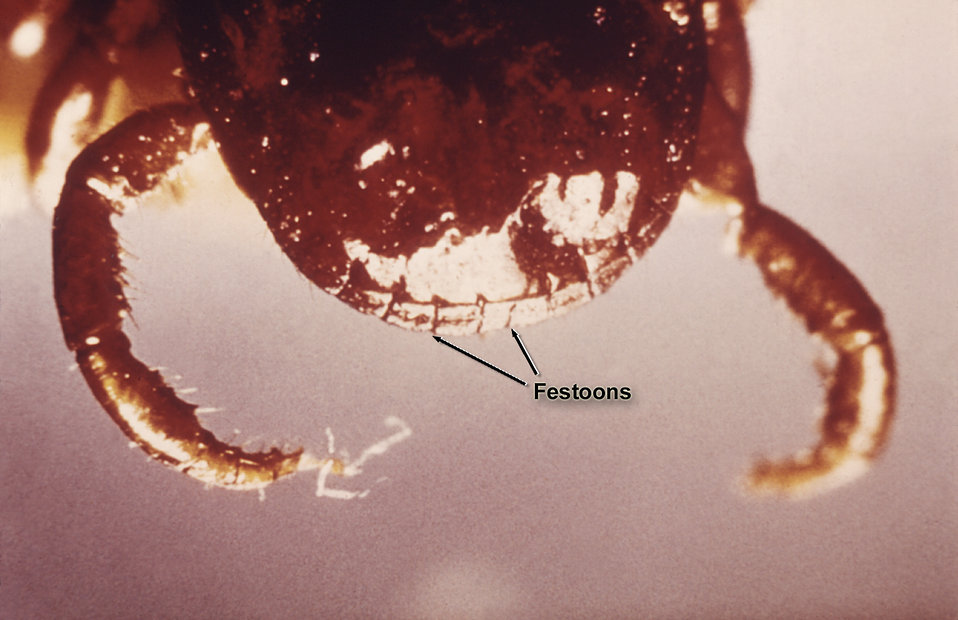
This North American Ixodidae hard tick displays a number of festoons on its posterior abdominal margin.